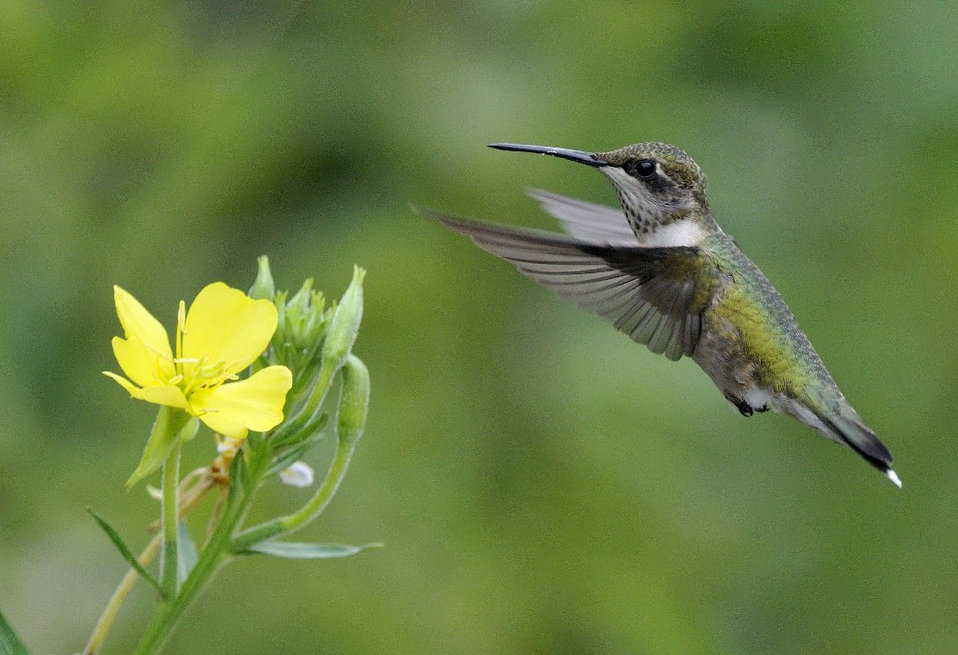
Photo of the Week - Ruby-throated Hummingbird (MA)

Photo of the Week 8/6/12

Ruby-throated Hummingbird photographed at the Quabbin Reservoir near South Athol, MA.